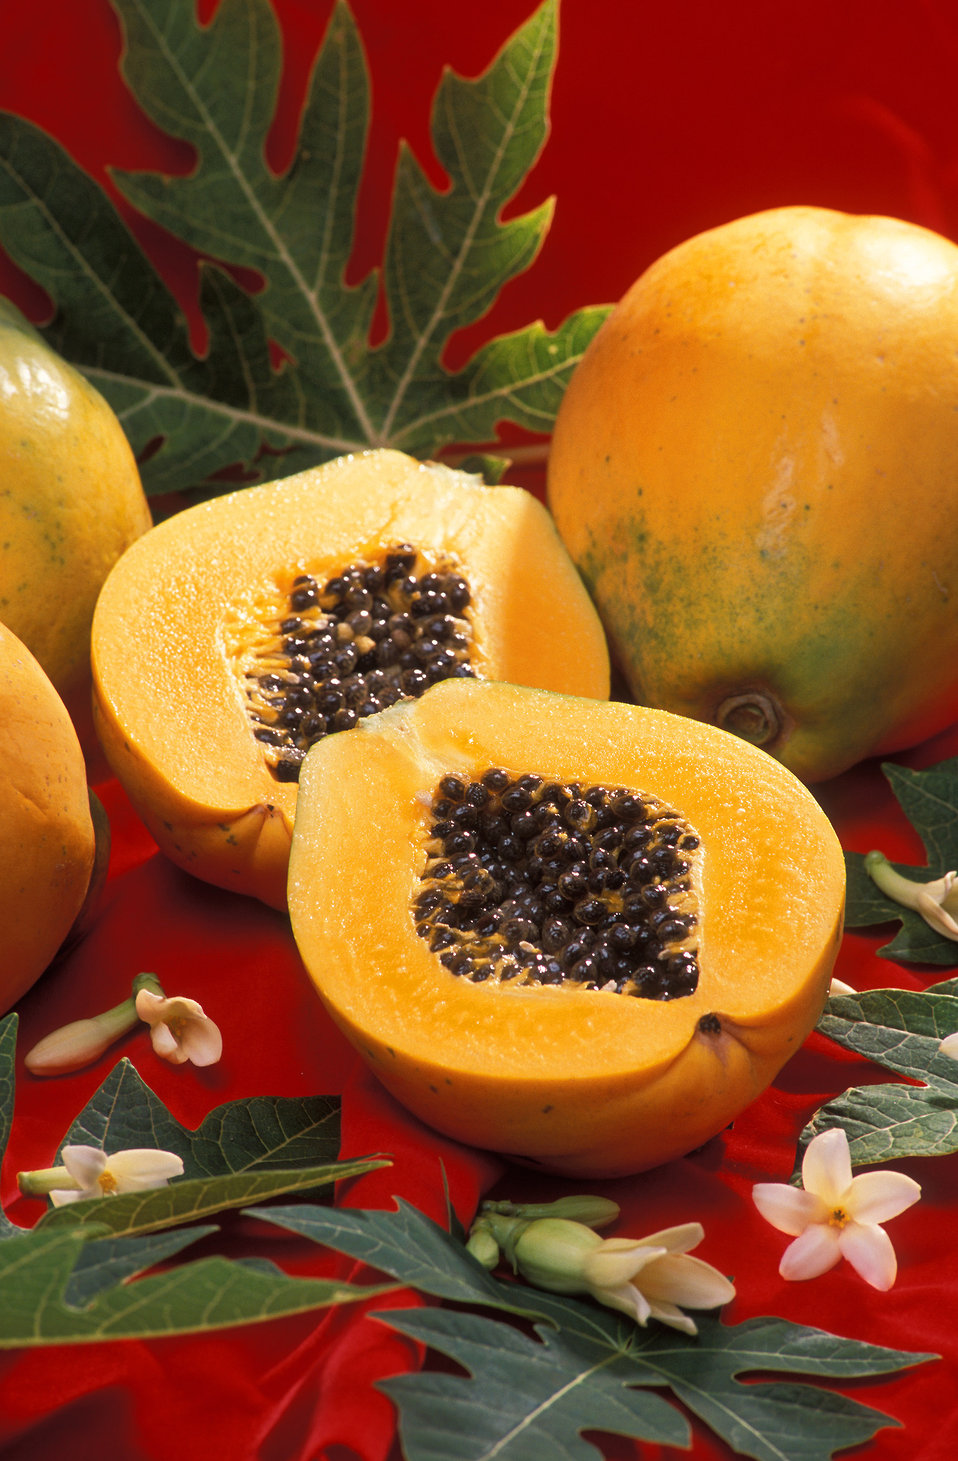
A Papaya is cut in half revealing its seeds on July 27, 2004.